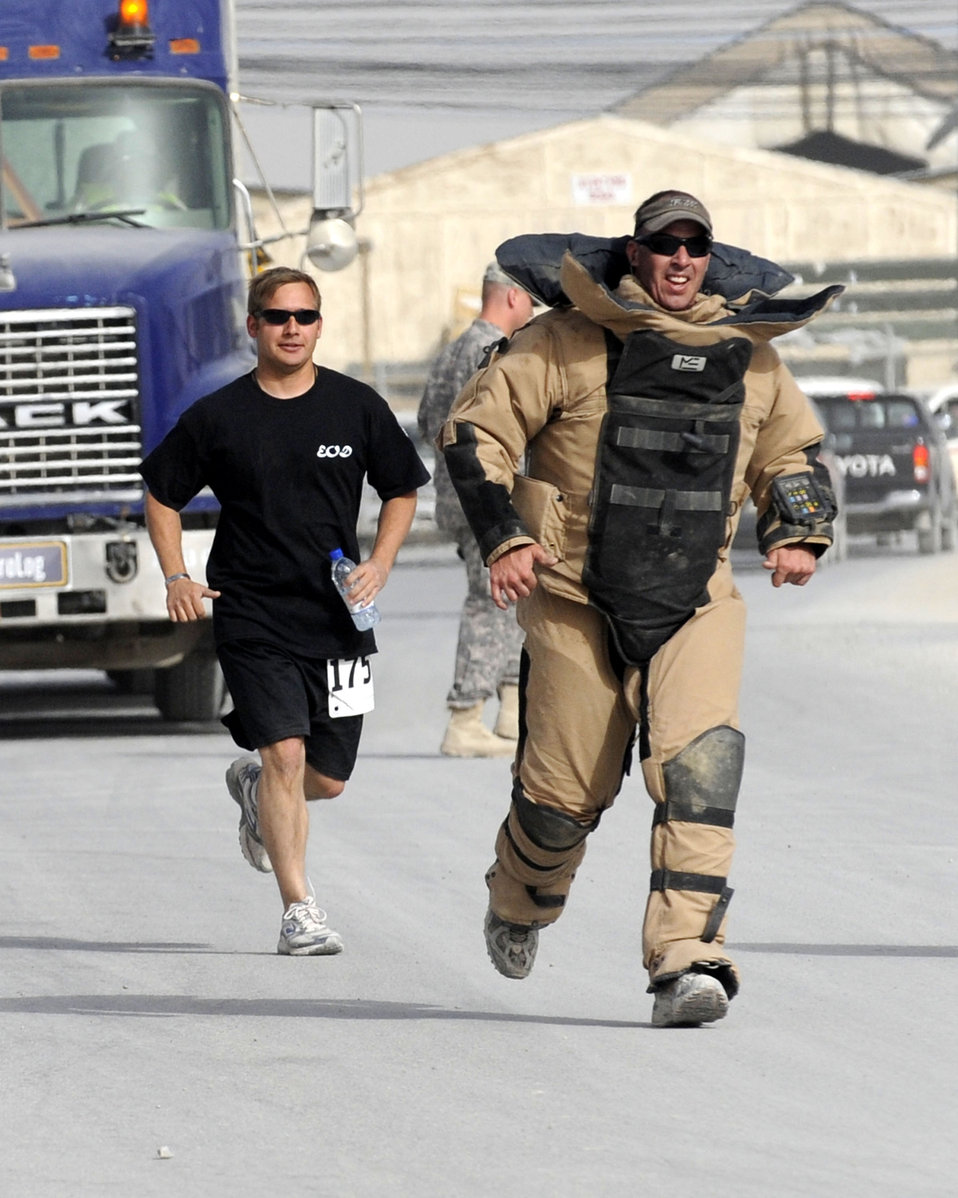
Kandahar members run for charity

Air Force and Navy explosive ordnance disposal participants ran the 10K race wearing a 70-pound military bomb suit March 21, 2010, at Kandahar Airfield, Afghanistan. The event raised more than $9,000 for the Wounded Explosive Ordnance Disposal Warrior Foundation.